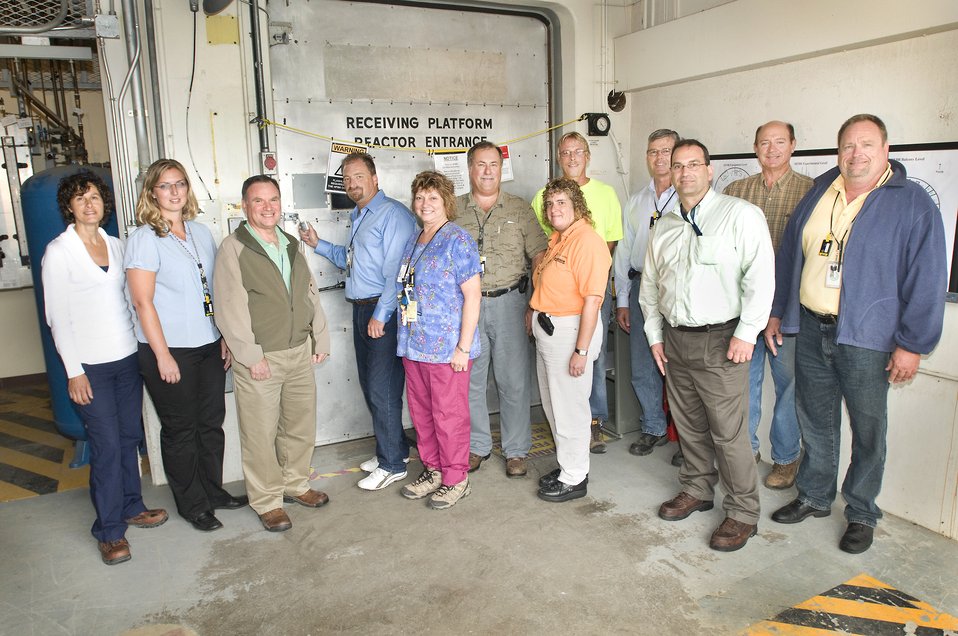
Recovery Act Speeds Closure of Research Reactor

The American Recovery and Reinvestment Act helped Brookhaven National Laboratory secure a major milestone recently by providing $6 million for cleanup and closure of a research reactor.

The door to the High Flux Beam Reactor (HFBR) is now locked, and the facility will be in a hibernation for up to 65 years. That’s the period needed for radiation levels to naturally decay so the reactor may be removed safely using conventional demolition techniques.